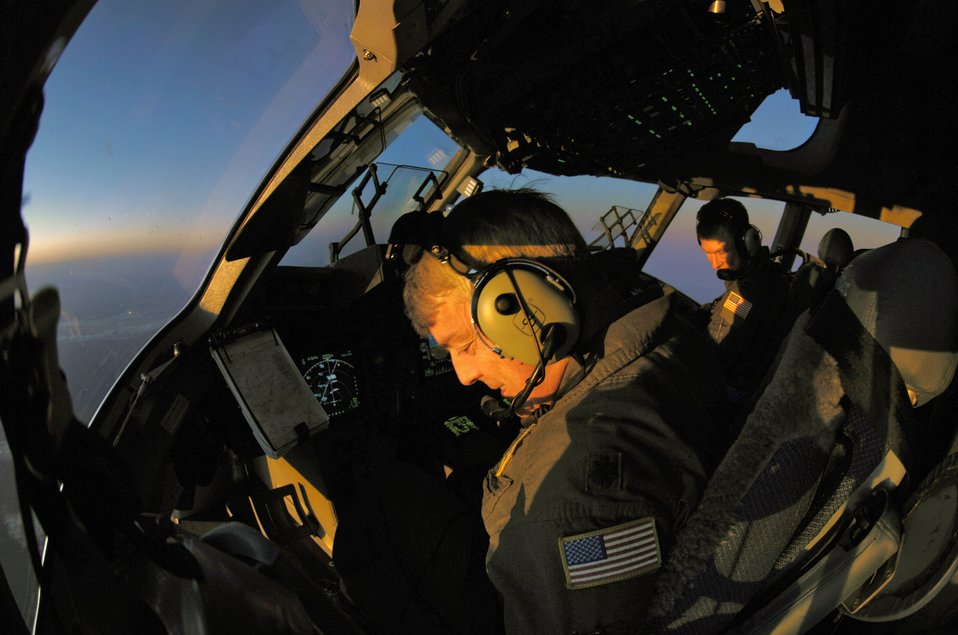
Off to the South Pole

Lt. Col. Merrill Murphy and Capt. Erin Montague fly a C-17 Globemaster III back to Christchurch, New Zealand, after a winter fly-in mission for Operation Deep Freeze to Antarctica Aug. 20. A C-17 and 31 Airmen from McChord Air Force Base, Wash., flew an augmentation of scientists, support staff, food and equipment for the U.S. Antarctic Program at McMurdo Station.